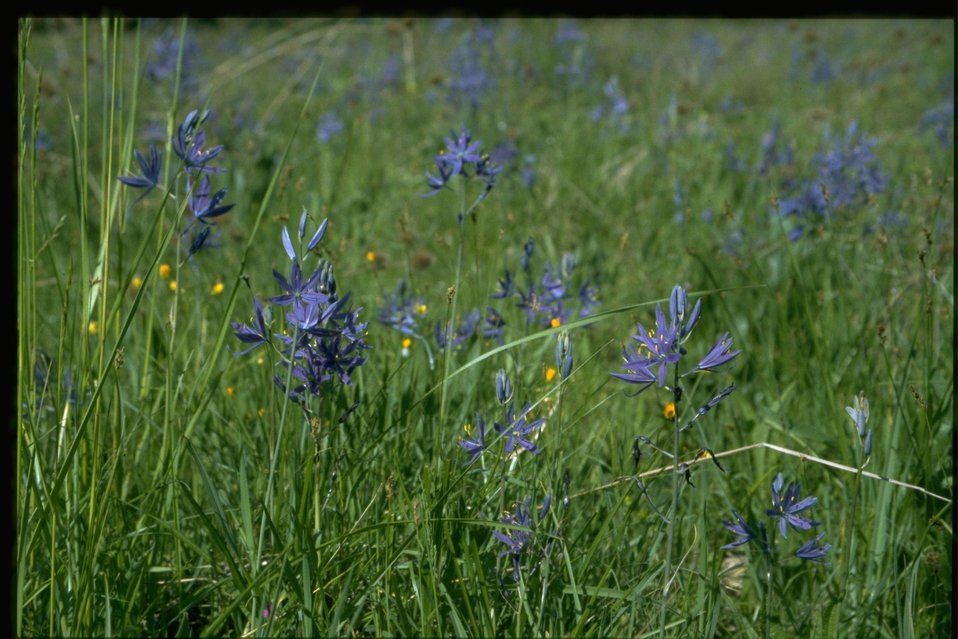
Farshot of Camassia quamash.